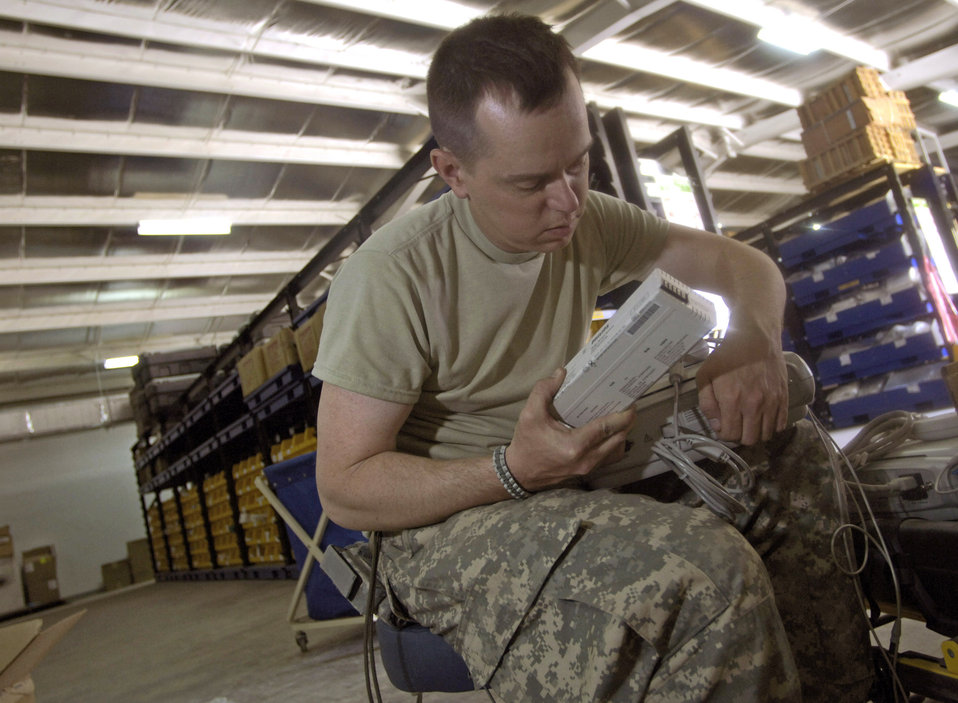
Airmen equip Afghan hospital with supplies, knowledge

Tech. Sgt. Curtis Miller assembles medical equipment in a warehouse Aug 17. Once assembled, the equipment will be transported across the street, to the newly built $6.5 million, 50-bed hospital on the Afghan National Army's Hero Camp, located just outside Kandahar Airfield in southern Afghanistan. Sergeant Miller is a medical logistics technician and Afghan National Army mentor. He is assigned to the Combined Security Transition Command-Afghanistan headquartered on Camp Eggers, Kabul, Afghanistan.